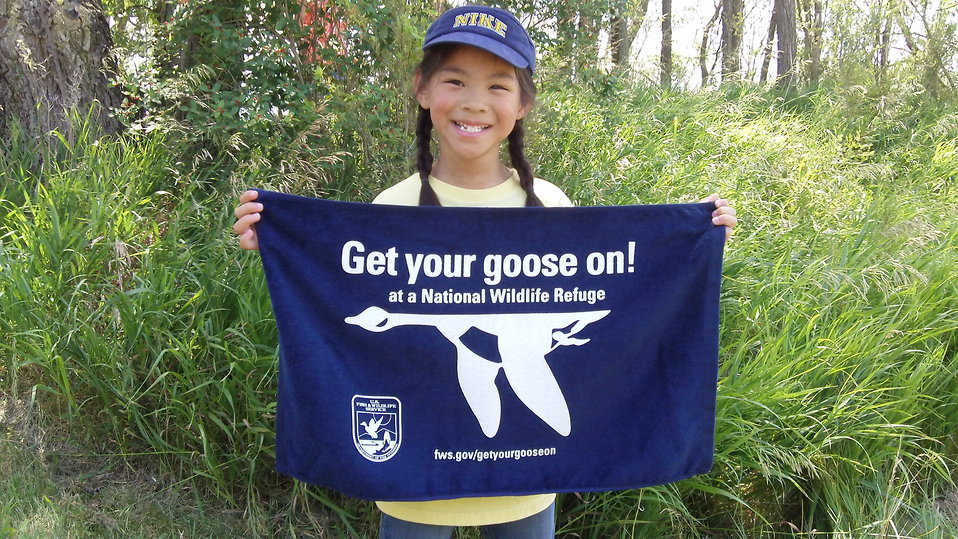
Get Your Goose On!

Photo taken at Huron Wetland Management District in east-central South Dakota.